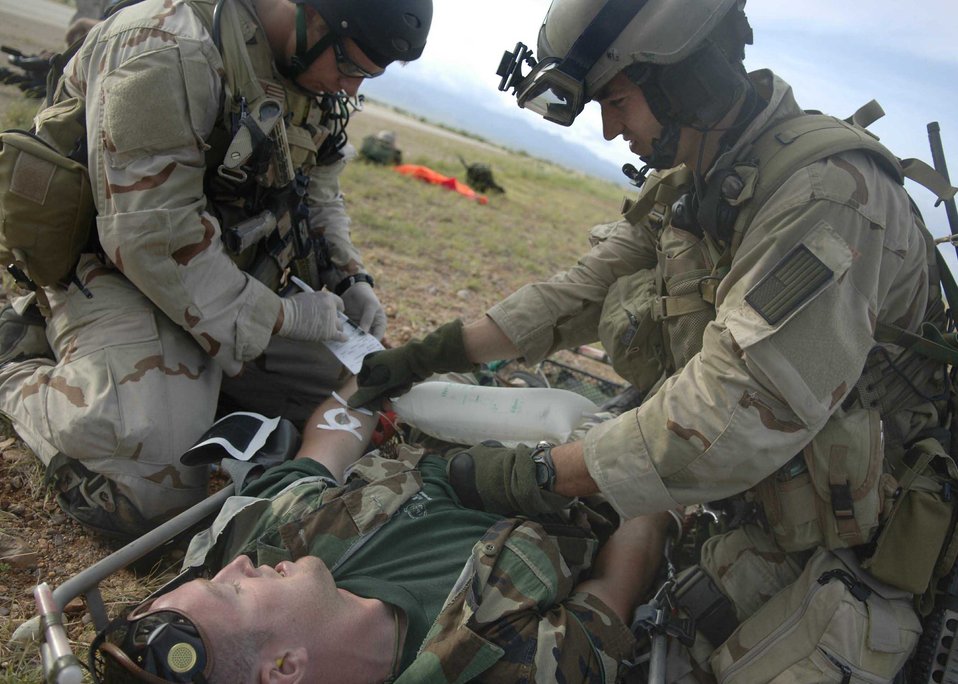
Angel Thunder

Staff Sergeant David Glass and Staff Sergeant Ivan Eggel start an IV on a simulated mass casualty survivor July 27 as part of exercise Angel Thunder. The mass casualty scenario involved two CH-47 Chinook helicopters crashing. Once on the ground, pararescuemen triaged survivors and relocated them to a casualty collection point. They were then flown to Davis-Monthan Air Force Base to a simulated level 2/3 medical facility. This part of exercise Angel Thunder involved the 48th, 58th, 66th, 79th and 305th Rescue Squadrons as well as air support from the 358th Fighter Squadron.